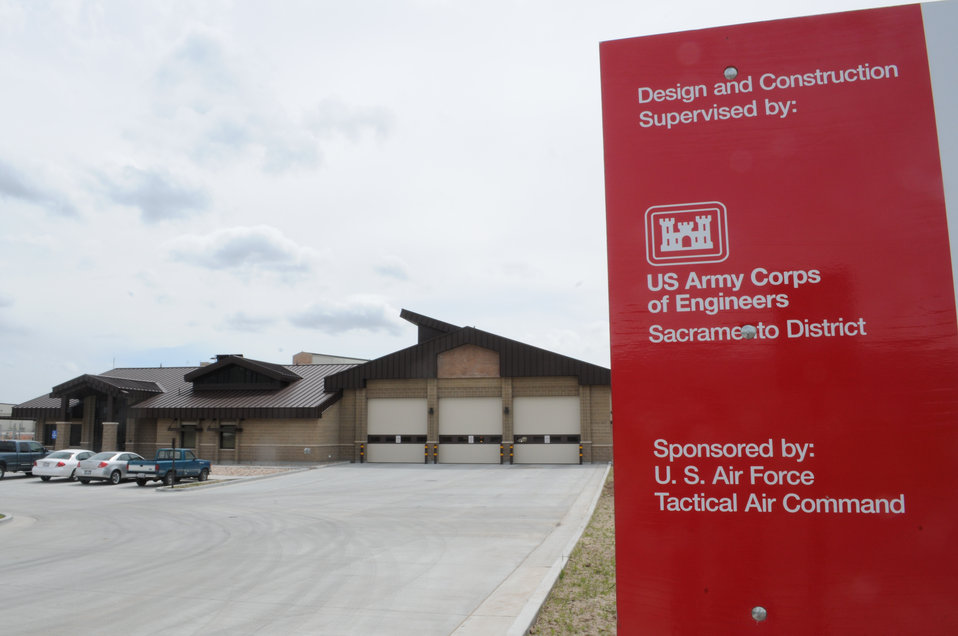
Corps completes first Gold-rated facility at Hill Air Force Base

A view of the entrance to the new three-bay fire station at Hill Air Force Base, Utah, May 16, 2011. The U.S. Army Corps of Engineers Sacramento District oversaw construction of the $4.5 million facility, which received a Gold rating under Leadership in Energy and Environmental Design. LEED is an internationally-recognized green building certification system developed by the U.S. Green Building Council in 2000.